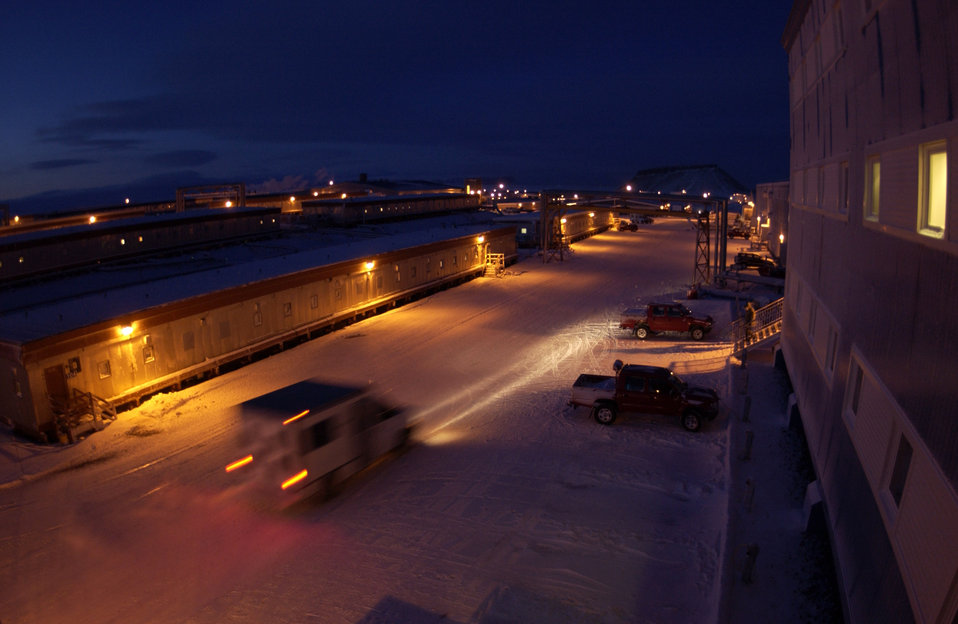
Life at Thule

The base taxi arrives at a dormitory to pick up Airmen for work Jan. 25 at Thule Air Base, Greenland. Thule AB Airmen with two major space missions support the Air Force Space Command mission. Two tenant units contribute to the space mission here.